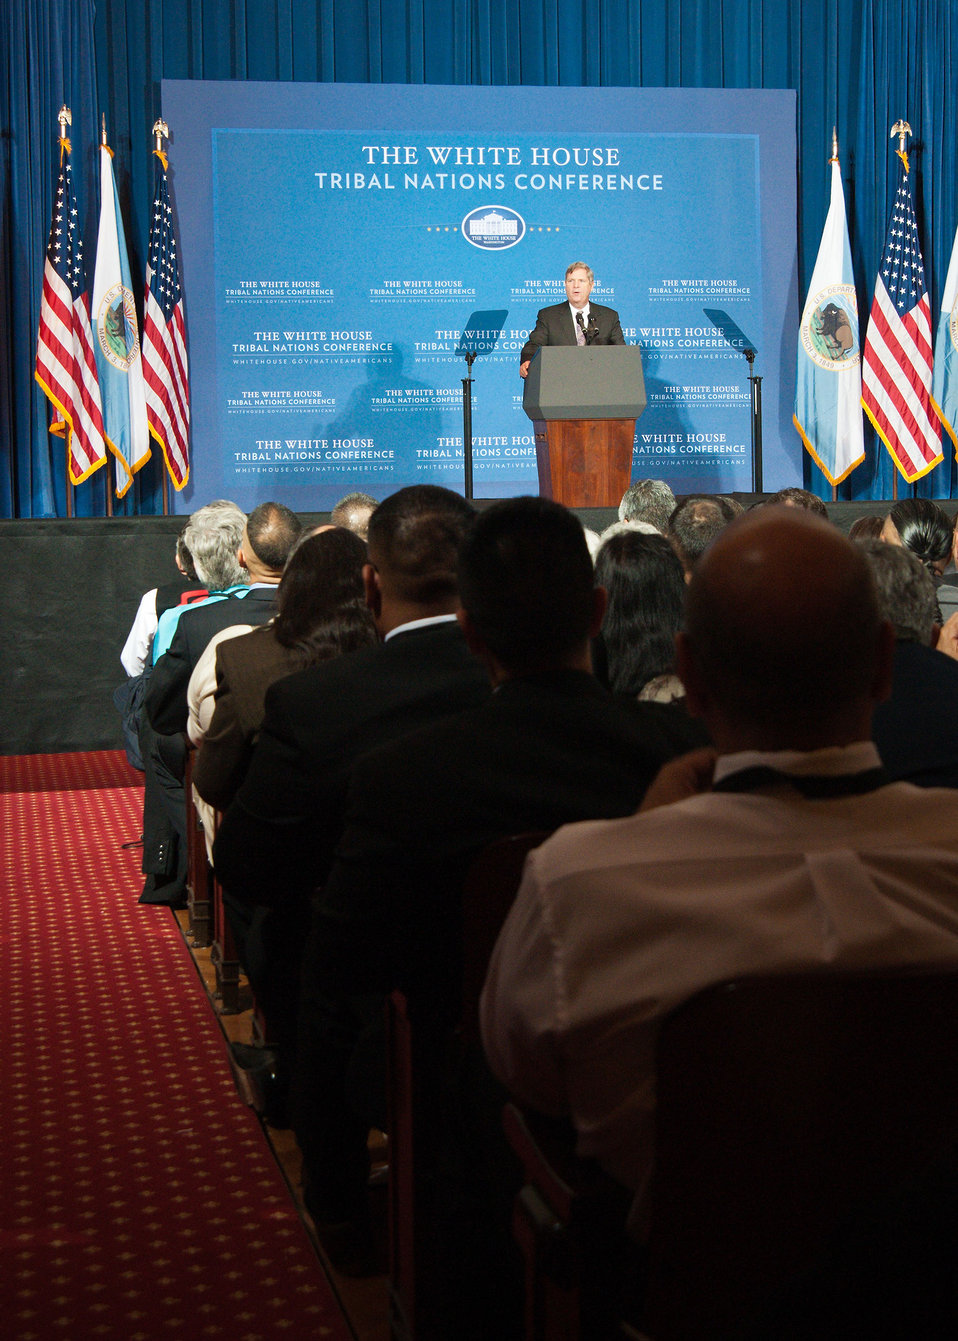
Agriculture Secretary Tom Vilsack speaks at the Fourth Annual White House Tribal Nations Conference at the U.S. Department of Interior in Washington D.C. on Wednesday, Dec. 5, 2012. Cabinet members Interior Secretary Ken Salazar, Agriculture Secretary Tom Vilsack, Education Secretary Arne Duncan, Treasury Deputy Secretary Neal Wolin, Commerce Acting Secretary Rebecca Blank, Health and Human Services Secretary Kathleen Sebelius discussed the gains and progress of the Obama Administration concerning Native American Tribal Nations.